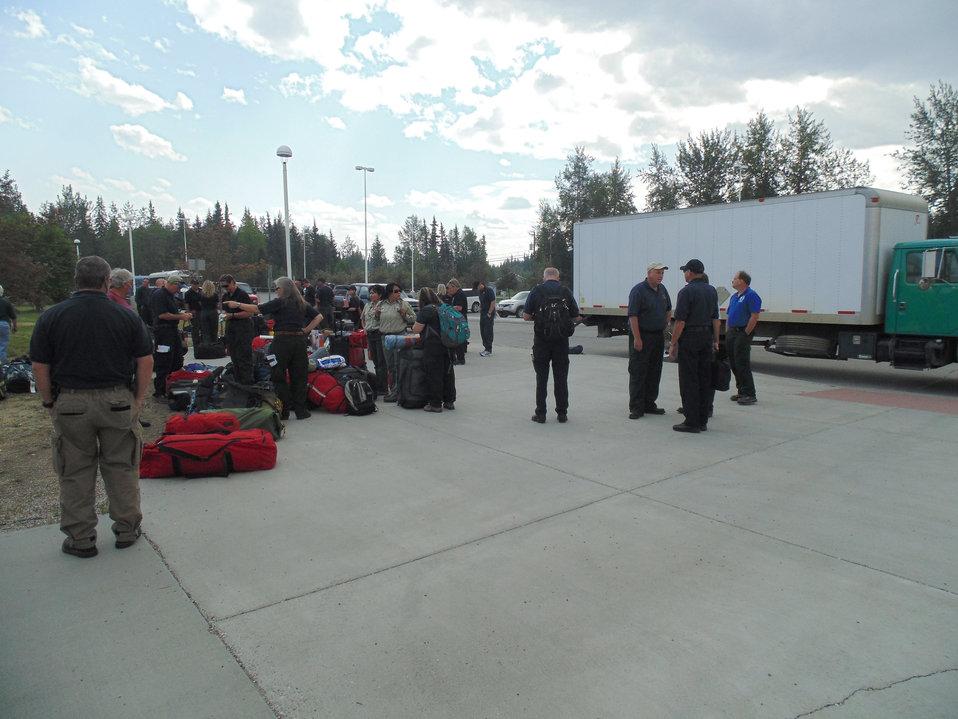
The McGowan Type 1 Team arrives with its gear to fight the Stewart Creek Fire. The Stewart Creek Fire located 25 miles east of North Pole, AK began on Jun. 19, 2013 due to human causes and has consumed an estimated 85, 475 acres. The fire is approximately 57% contained.